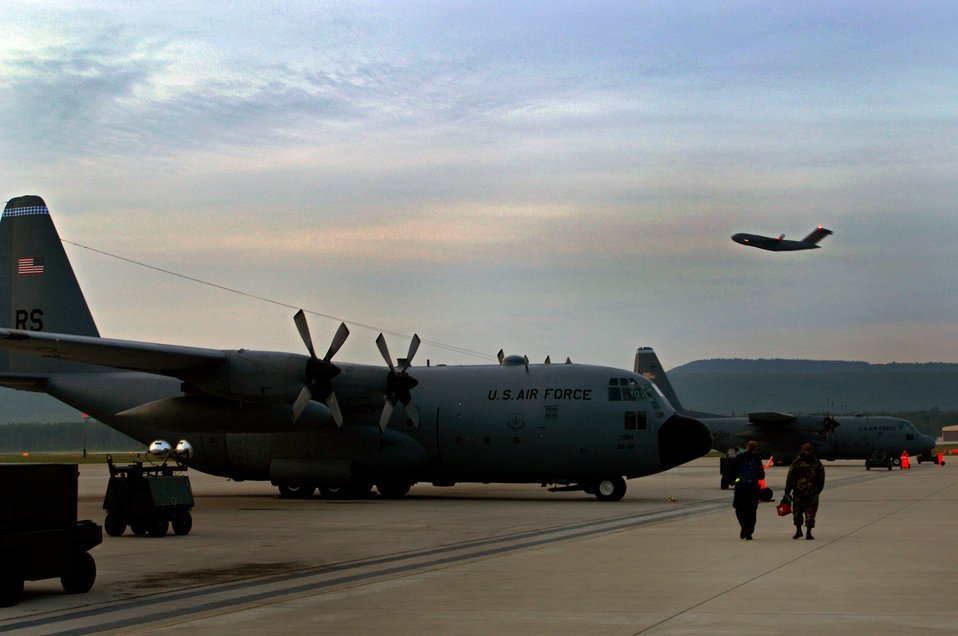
Underneath painted sky

Airmen from the 86th Aircraft Maintenance Squadron prepare to start another day at Ramstein Air Base, Germany, Sept. 18. The Ramstein flightline is one of the busiest in the Air Force, launching more than 40 aircraft each day.